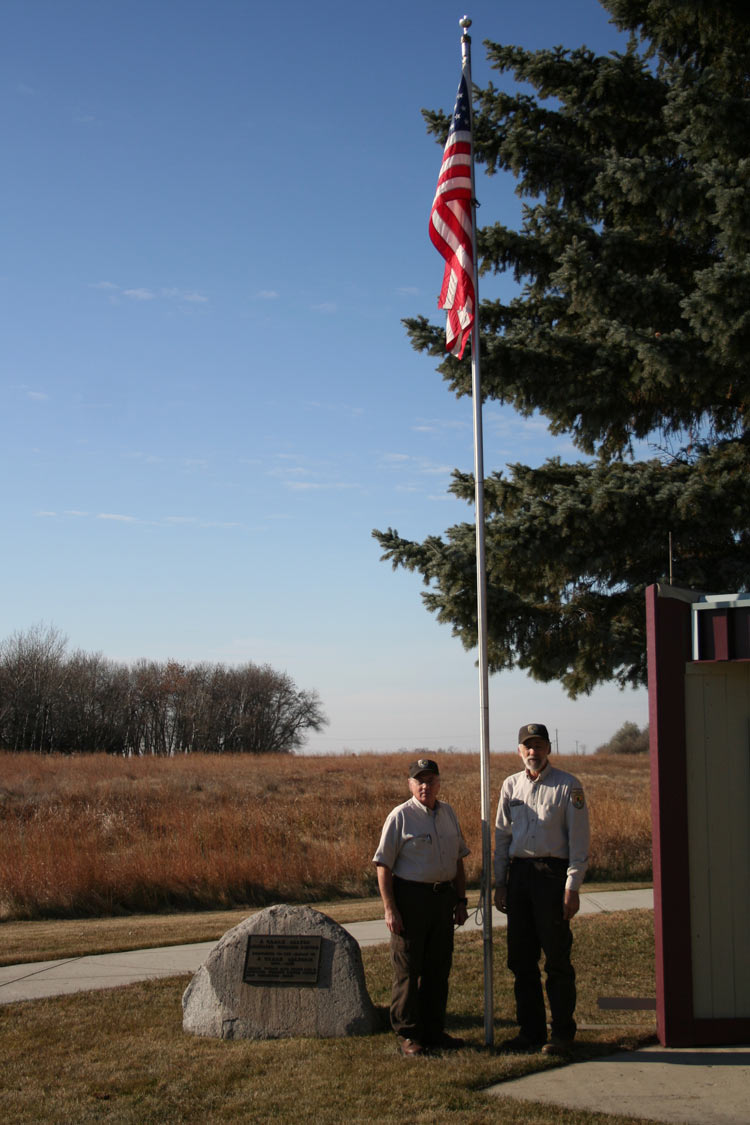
James Bohl and James Jansky-Mountain-Prairie Region

James Jansky, who was in the Navy from 1967 to 1971 and the National Guard from 1976 to 2009, and James Bohl, who was in the Army from 1967 to 1969, work at J. Clark Salyer National Wildlife Refuge in North Dakota.